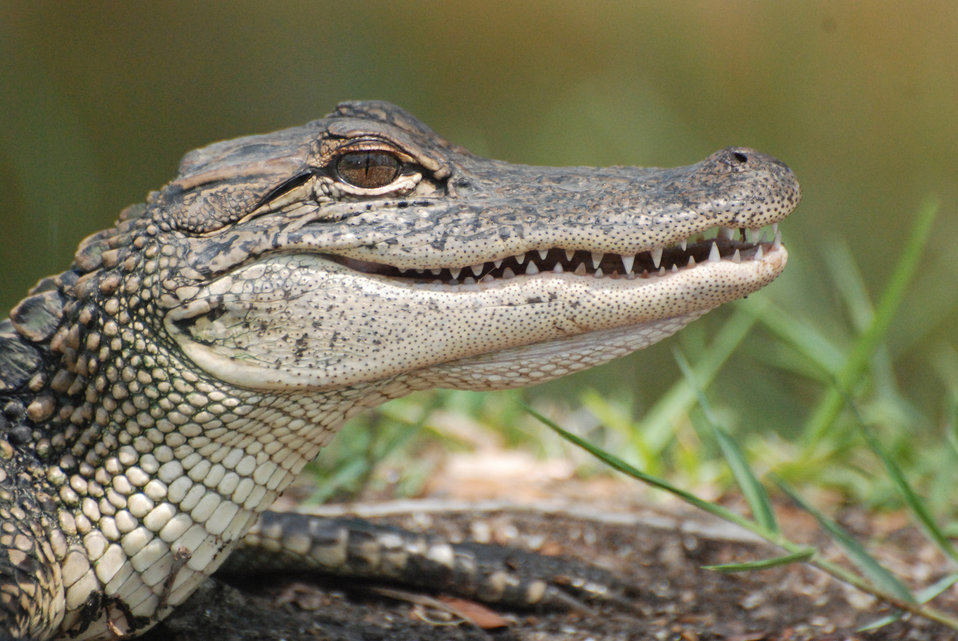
American alligator

A young american alligator at the edge of a pond..